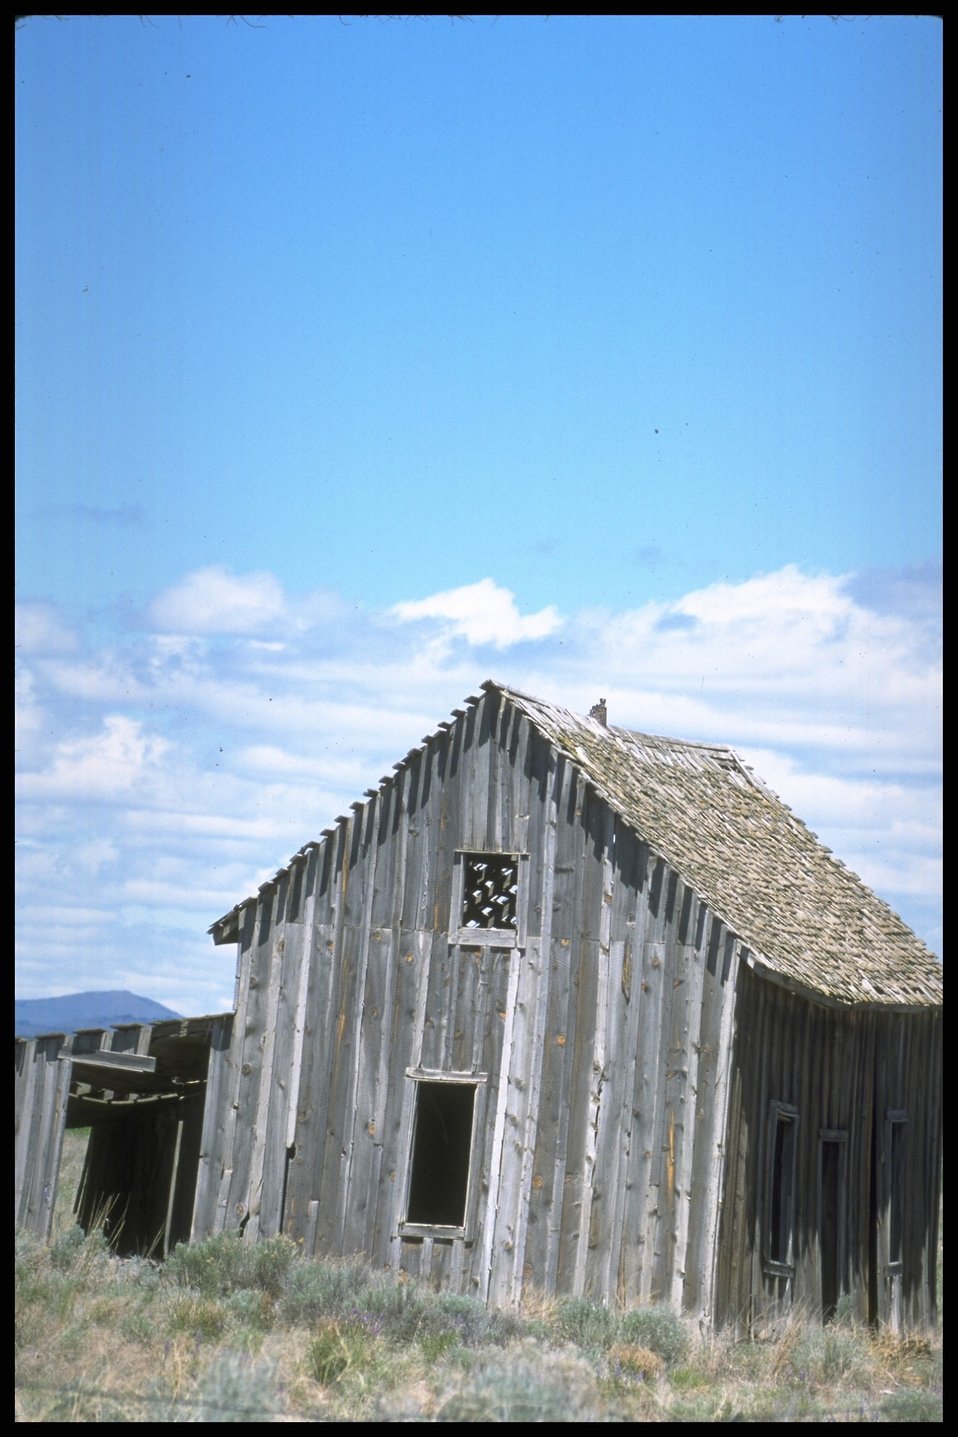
Old house at Shirk Ranch, Lakeview District.